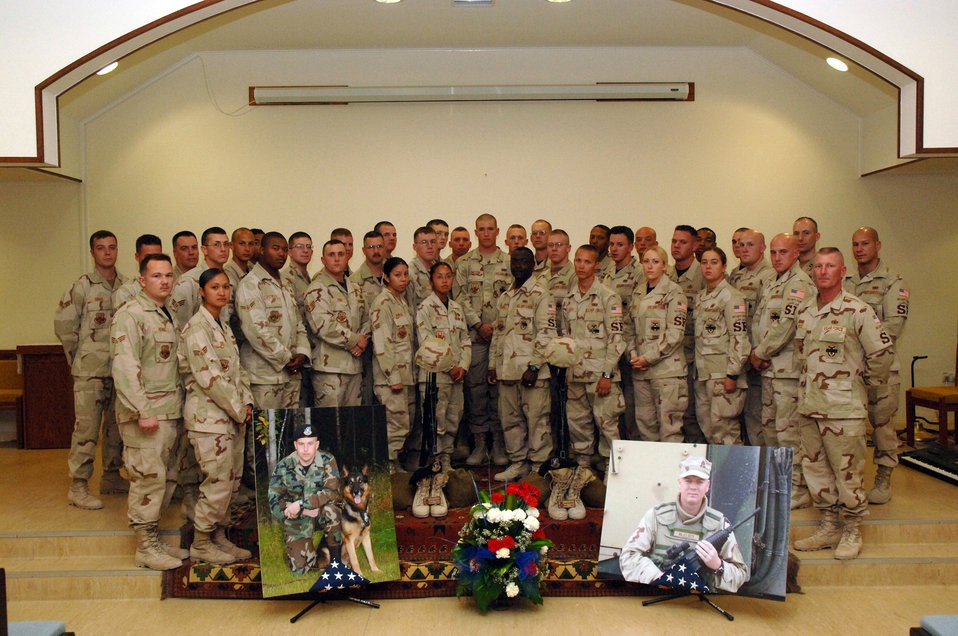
Final salute

SOUTHWEST ASIA (AFPN) -- More that 200 people attended a memorial service at a deployed location in Southwest Asia for the two security forces Airmen killed in Iraq Jan. 22. In attendance were 40 other deployed members from Elmendorf Air Force Base, Alaska, home station of the fallen Airmen -- Tech. Sgt. Jason L. Norton and Staff Sgt. Brian McElroy. Joining members from the 379th Air Expeditionary Wing were British and Australian troops who came to pay their respects.